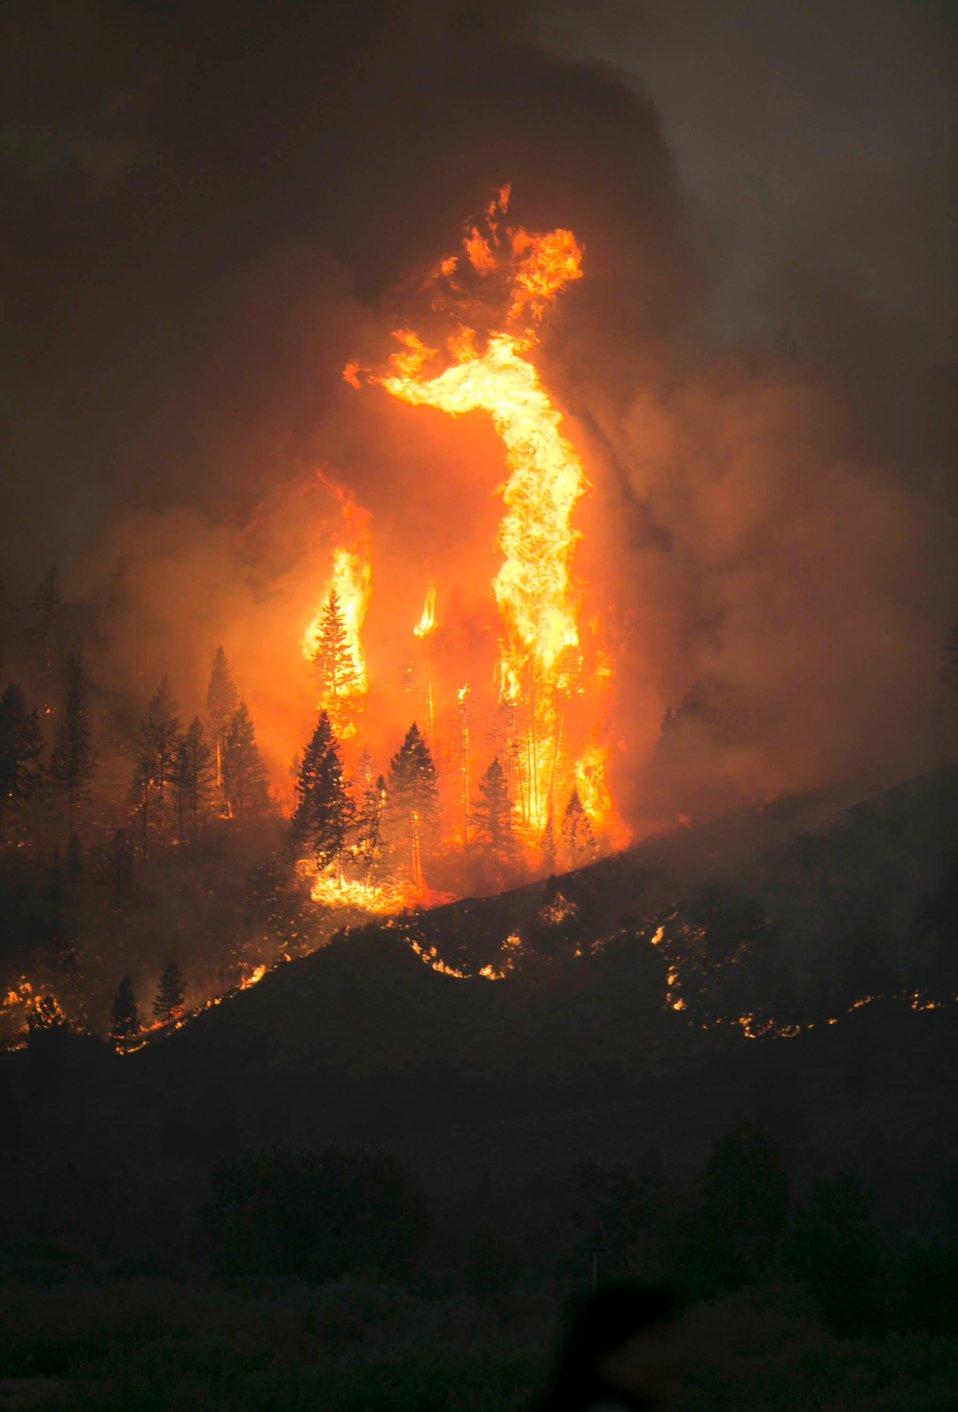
The Elk Complex Fire in the Boise National Forest near Pine, ID began on Aug. 08, 2013 by lightning has consumed approximately 98,413 acres and is approximately 5% contained.